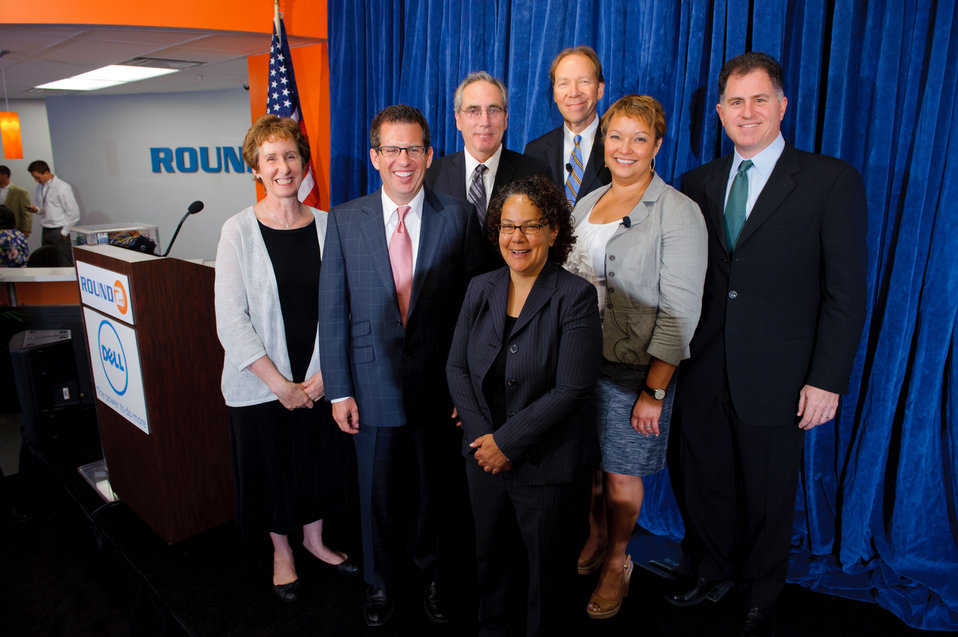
July 20, 2011 - Round2, electronics recycling facility in the spotlight for national announcement

Today, EPA Administrator Lisa P. Jackson traveled to Round2, an Austin, TX electronics recycling facility, to help announce the Obama Administration’s National Strategy for Electronics Stewardship. She was joined fellow administration officials and business leaders including GSA Administrator Martha N. Johnson, White House Council on Environmental Quality Chair Nancy Sutley, Dell Inc. CEO Michael Dell, Sprint CEO Dan Hesse and Mark Small, a Sony vice president.

To download this image:
1. Right-click the image and under 'View all sizes,' choose 'original'
2. Select the link to 'Download the original size of this photo'